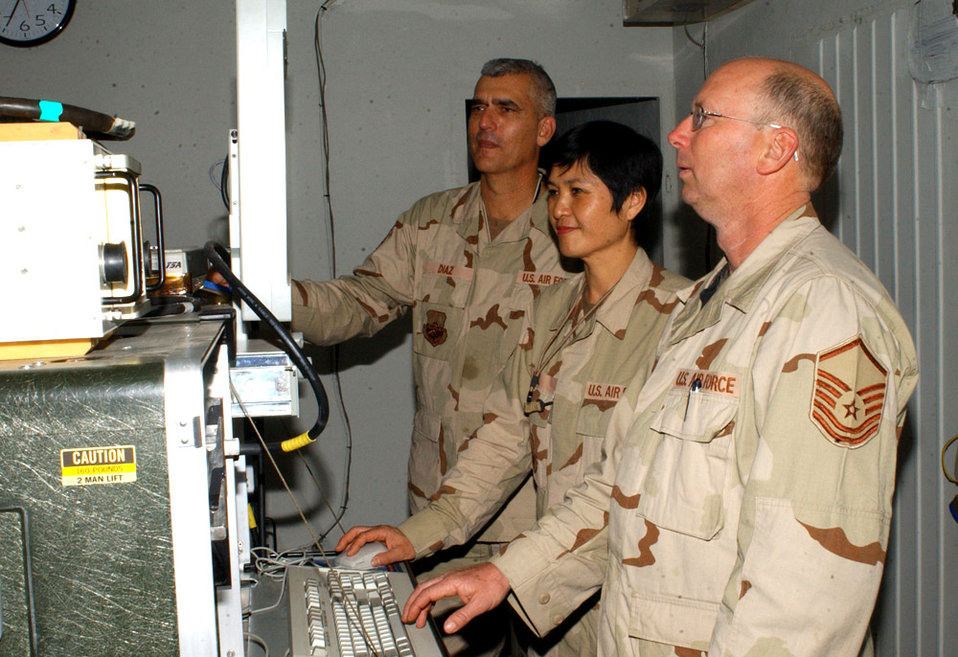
Maintenance check

BALAD AIR BASE, Iraq -- (Left to right) Tech. Sgt. Gerardo Diaz, Senior Master Sgt. Huey Hill and Master Sgt. Ralph Cole run a computer confidence check on an improved avionics intermediate system before testing an F-16 Fighting Falcon part. Technicians perform the check each time they test a part. The sergeants are all with the 332nd Expeditionary Maintenance Squadron.